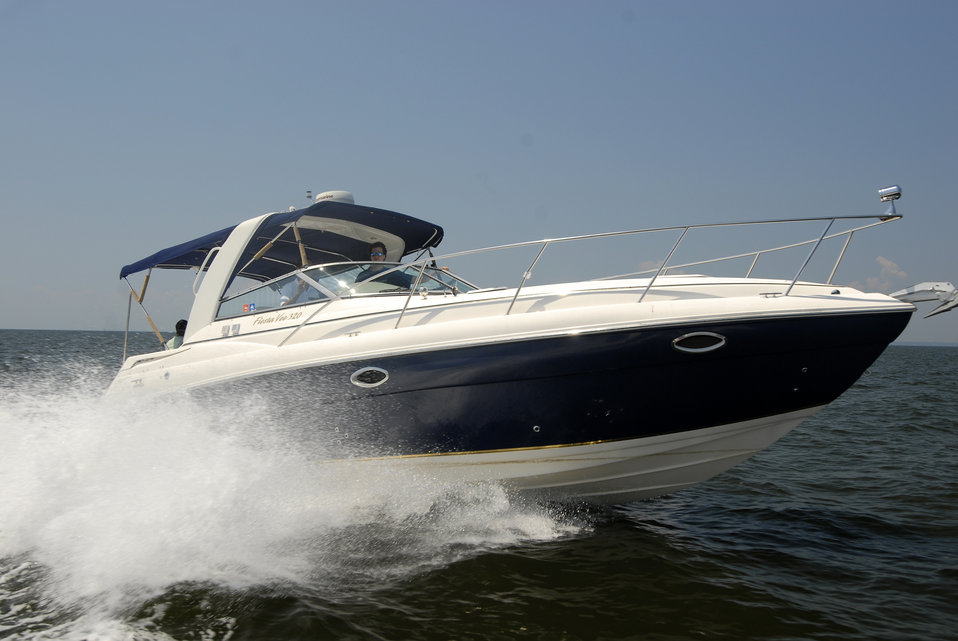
Recreational boating is a favorite pastime of local residents and visitors to the Chesapeake Bay, Maryland on July 14, 2008.